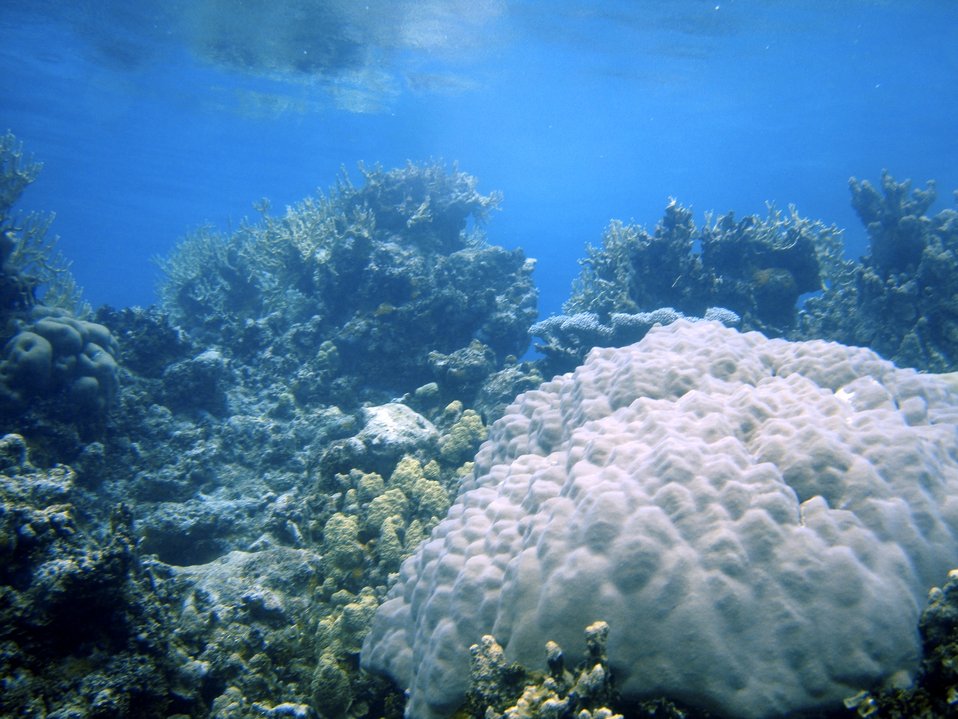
Poritidae coral Porites sp.right bottom